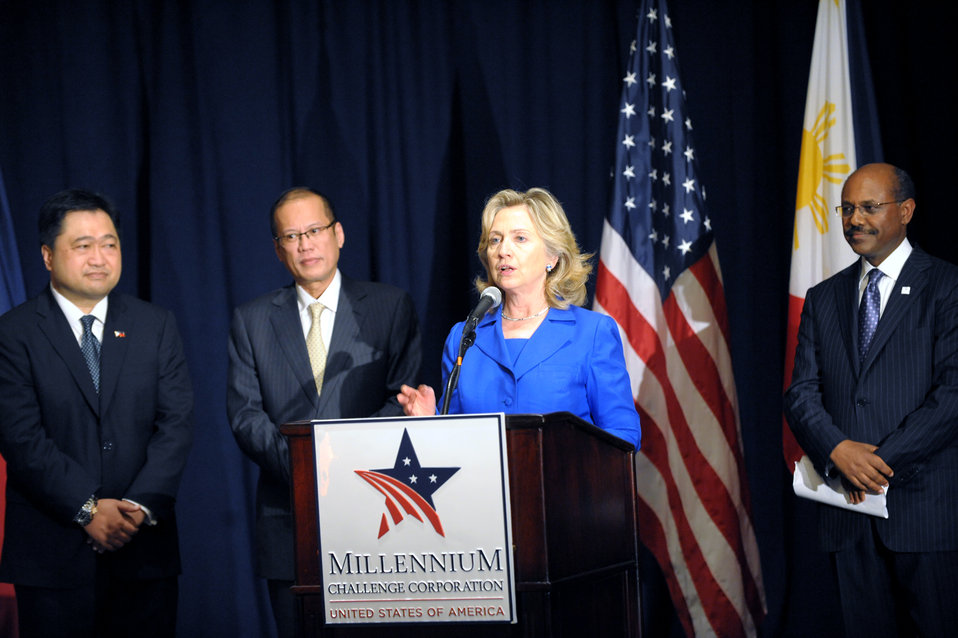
Secretary Clinton Delivers Remarks at a Millennium Challenge Corporation Signing Ceremony With Philippine President Aquino

U.S. Secretary of State Hillary Rodham Clinton delivers remarks at a Millennium Challenge Corporation signing ceremony with Philippine President Aquino at the Waldorf-Astoria in New York, New York, on September 23, 2010.